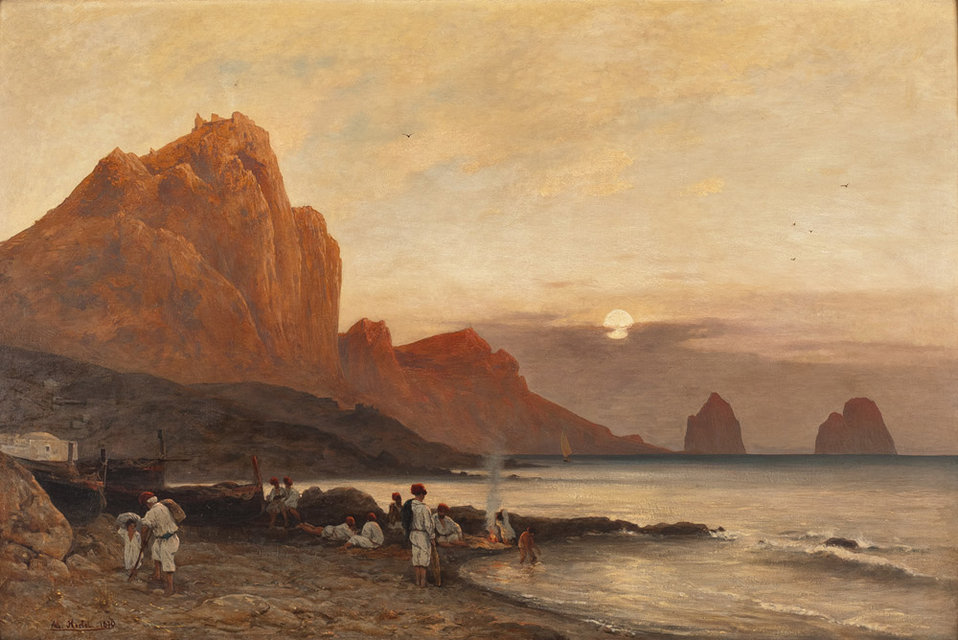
Albert Hertel - Insel Capri mit italienischen Fischern